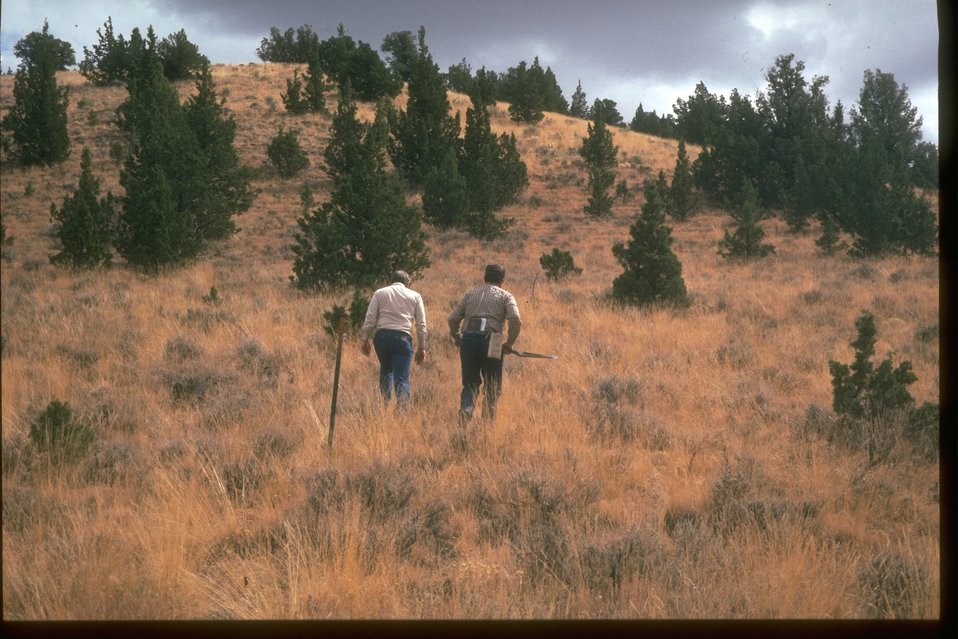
Excellent Idaho Fescue with Juniper invasion.